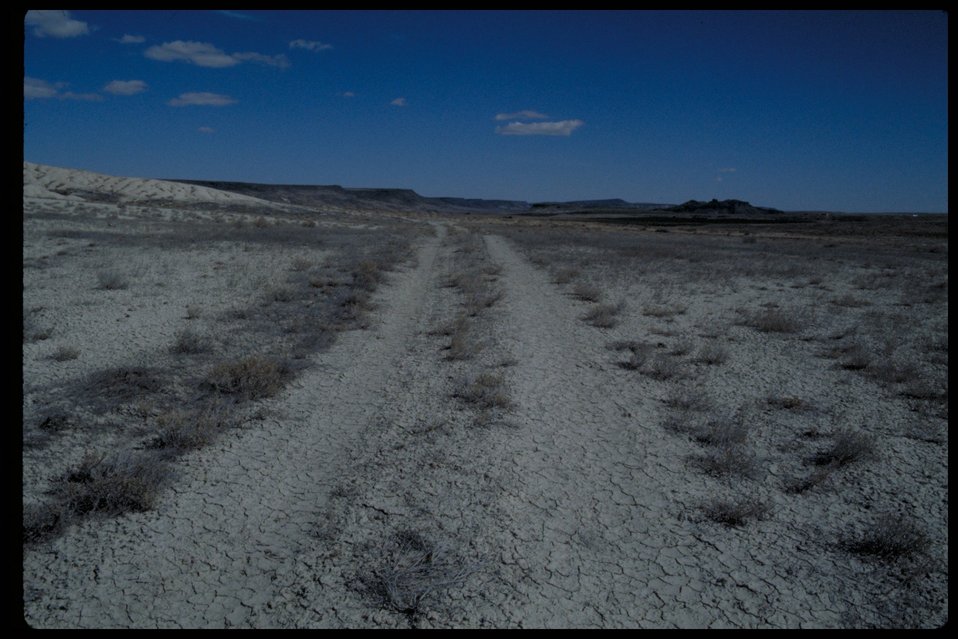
Oregon Trail near Wildhorse Butte Lower Snake River District